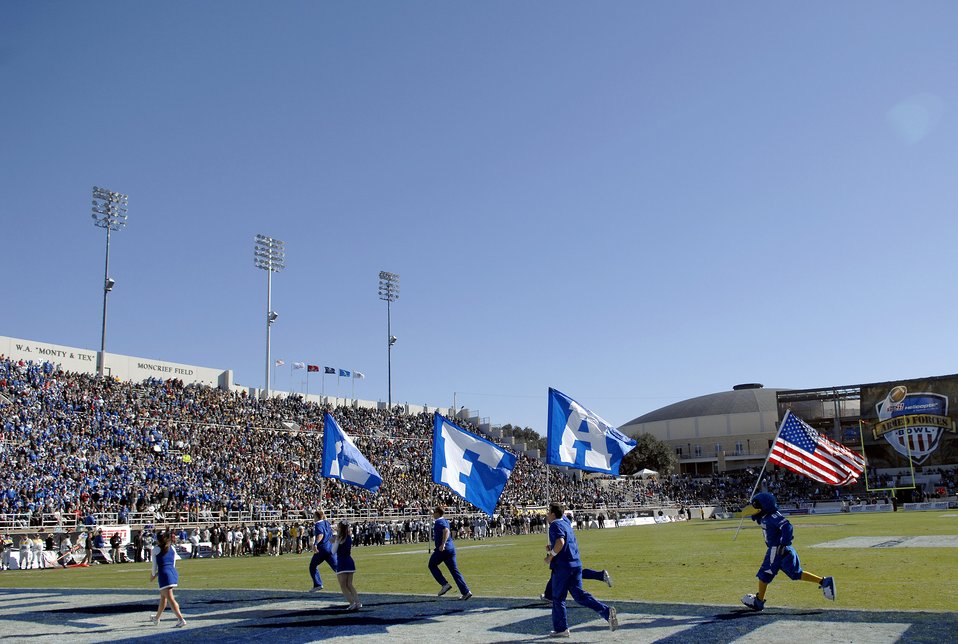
Falcons bowl return a bear

The U.S. Air Force Academy cheer squad takes to the field to fire up the sellout crowd of the Amon G. Carter stadium, after a second quarter touchdown by the Air Force during the Bell Helicopter Armed Forces Bowl game Dec. 31 in Ft. Worth, Texas.